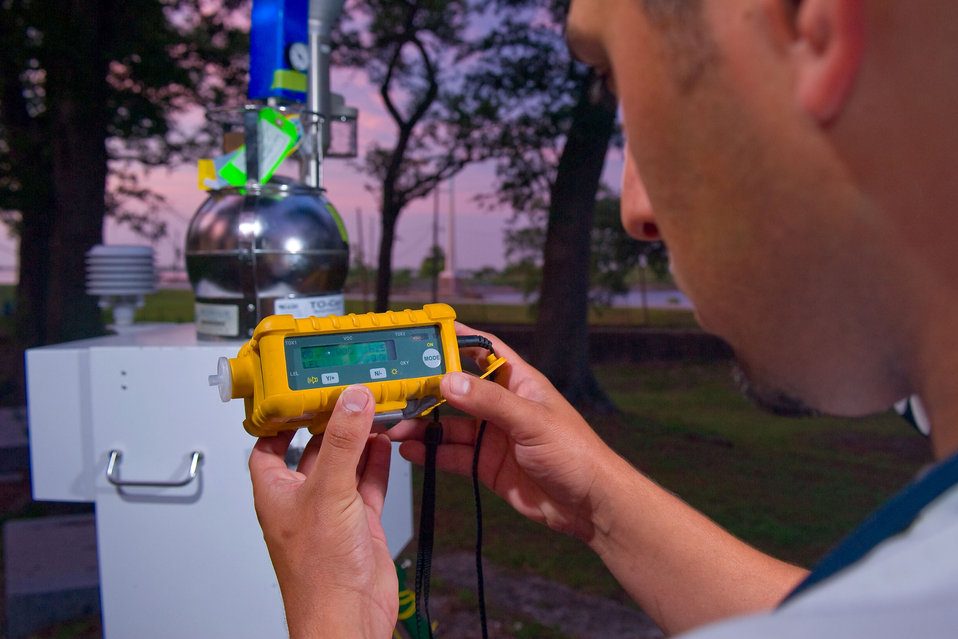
Verifying air sampling location.

May 11, 2010. Air sampling can be done with the help of metal summa canisters, such as the one set up here by EPA contractor Natanael Mavarro.